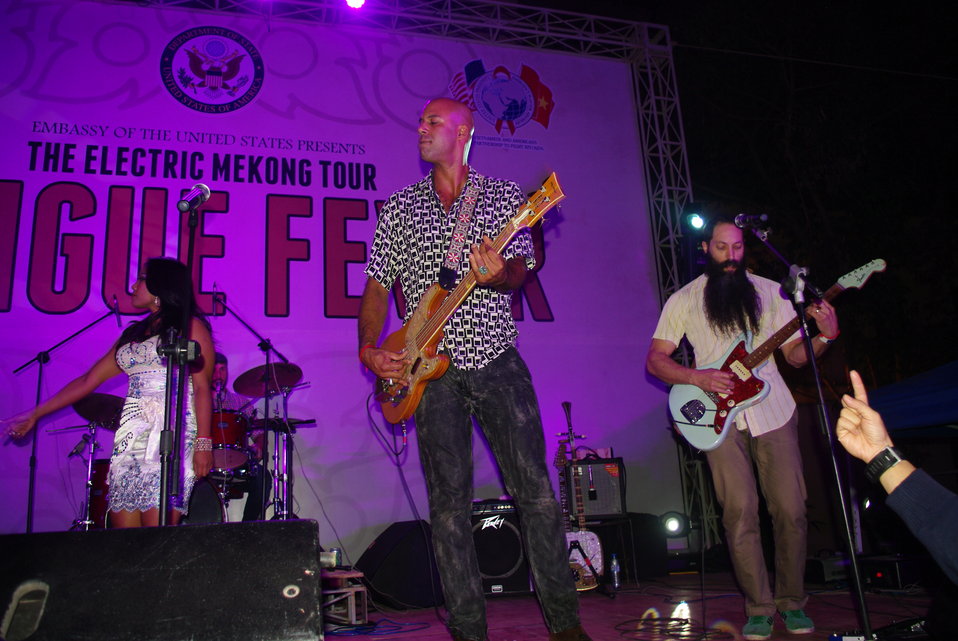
PEPFAR, U.S. Embassy Host Dengue Fever Concert in Hanoi